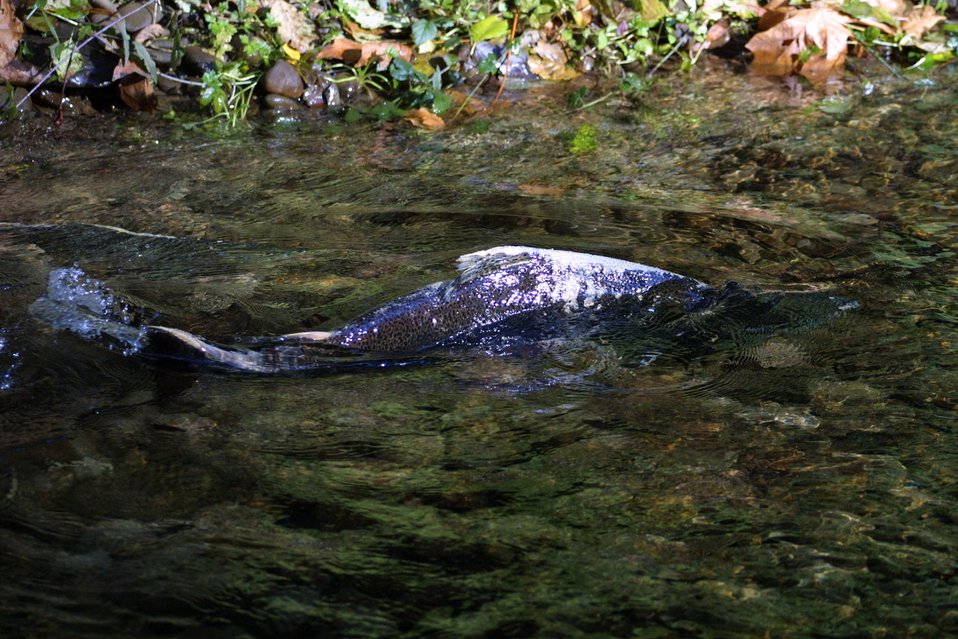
Adult Chinook Salmon spawning in Upper Tioga Creek, 11/8/01. Gravel bar created by boulder weir constructed to improve habitat.